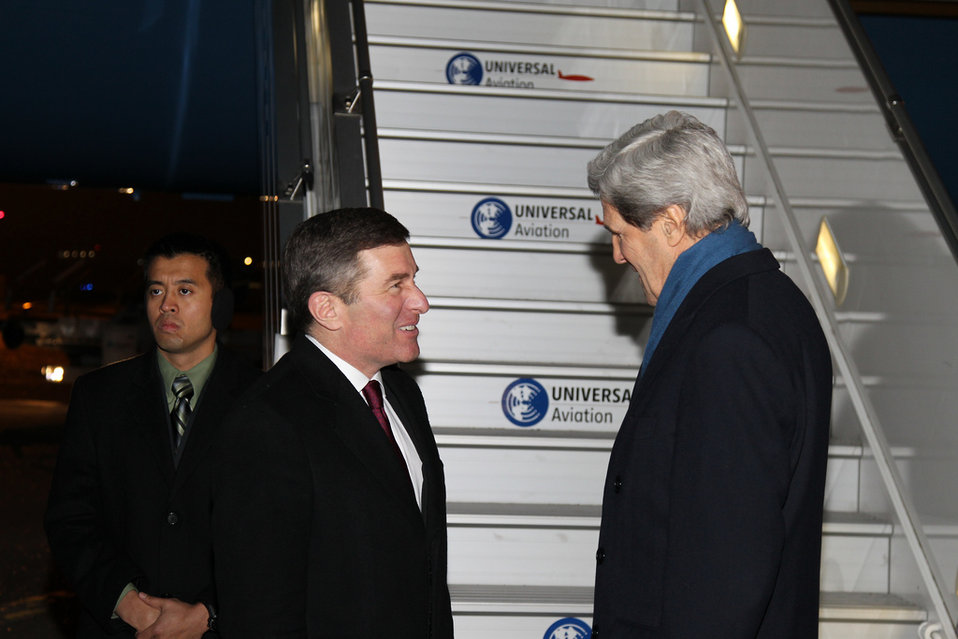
Secretary Kerry Arrives in Paris

U.S. Secretary of State John Kerry is greeted by U.S. Ambassador to France Charles Rivkin upon arriving in Paris, France, February 26, 2013.